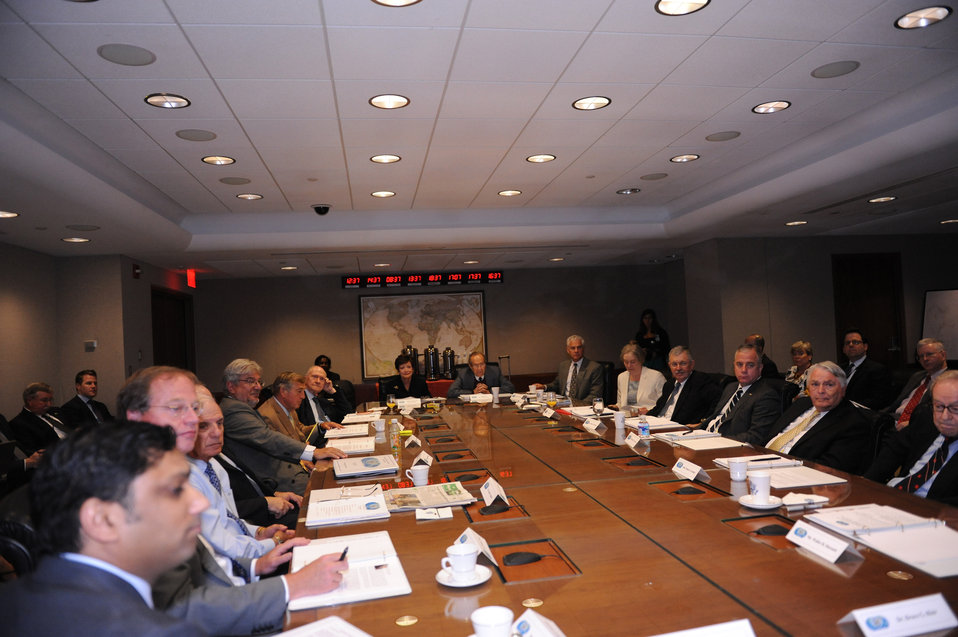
Under Secretary Tauscher Meets With International Security Advisory Board

Under Secretary of State for Arms Control and International Security Ellen Tauscher meets with the International Security Advisory Board at the Department of State in Washington, D.C., July 12, 2011.